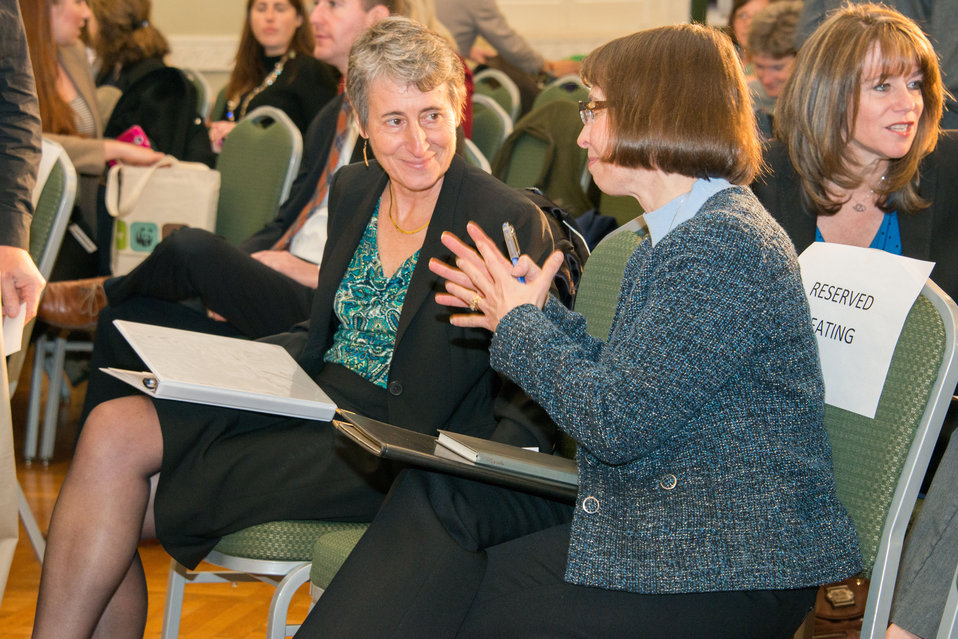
Public Meeting of Advisory Council on Wildlife Trafficking

Secretary of the Interior Sally Jewell speaks with Ambassador Judith Garber, Principal Deputy Assistant Secretary of the Bureau of Oceans and International Environmental and Scientific Affairs at the Department of State